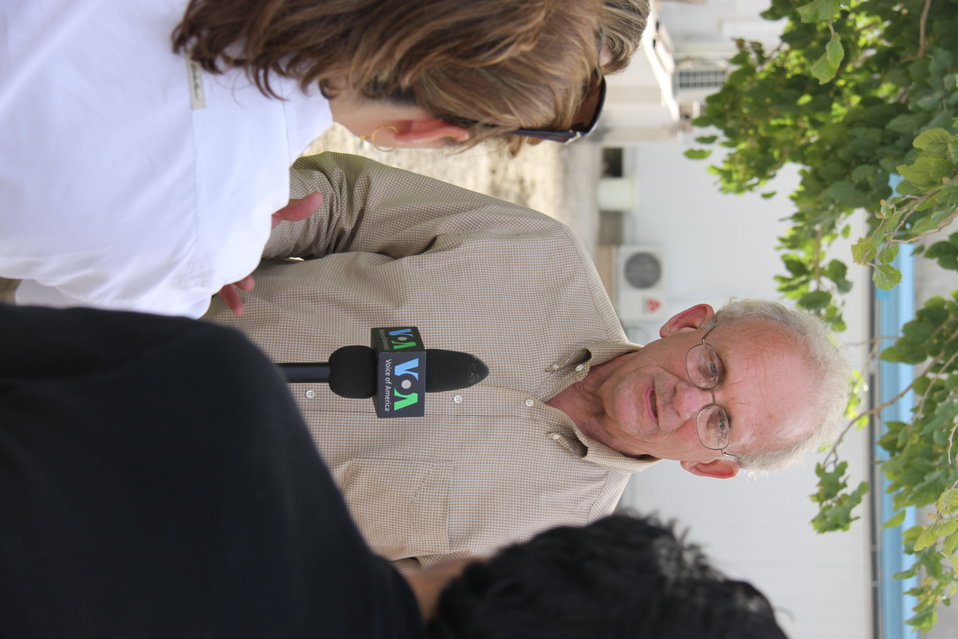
Meeting with Local Leaders in Kandahar